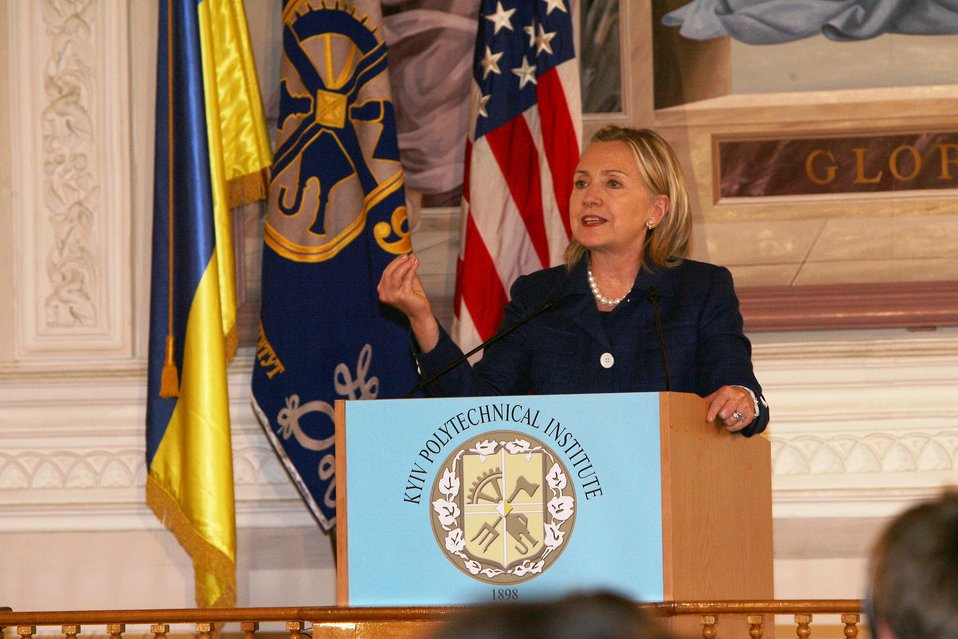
Secretary Clinton Addresses Kyiv Polytechnic Institute Town Hall

U.S. Secretary of State Hillary Rodham Clinton responds to students’ questions at Kyiv Polytechnic Institute in Kyiv, Ukraine, on July 2, 2010.